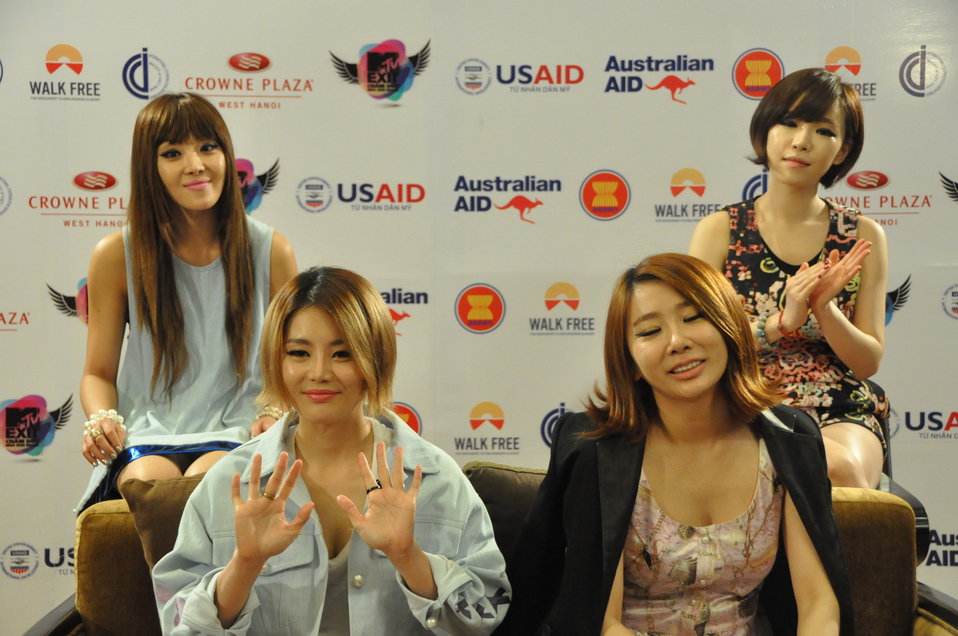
Brown Eyed Girls Meet the Press in Hanoi, May 27, 2012